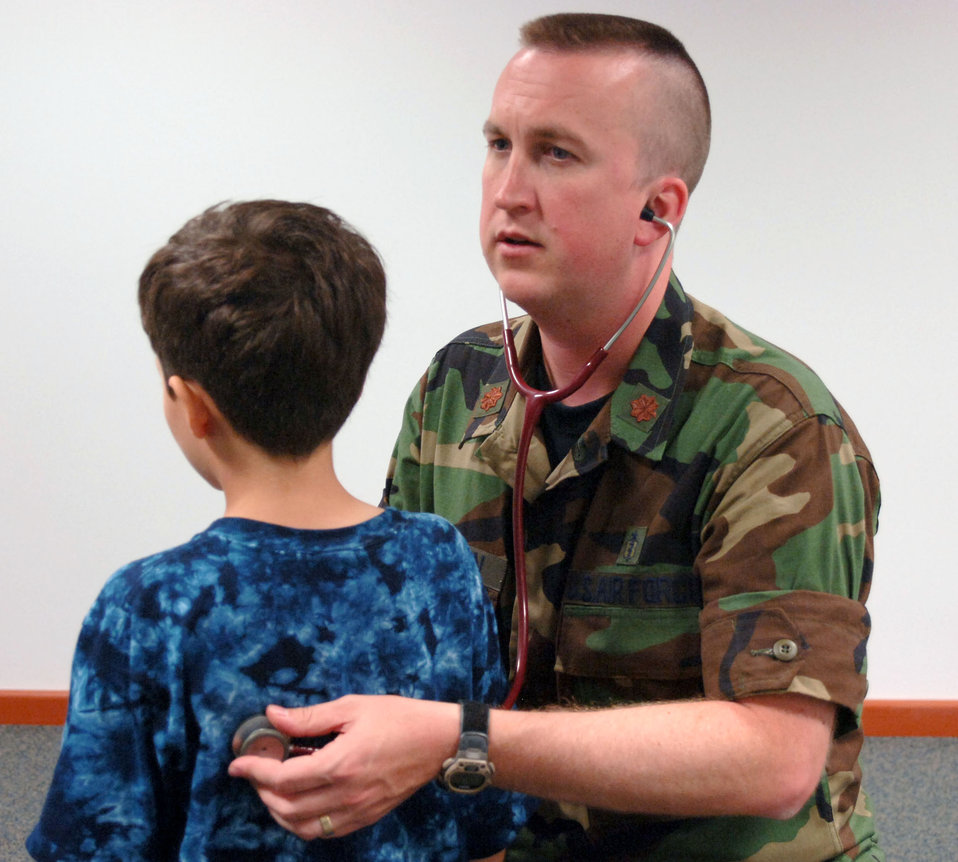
Incirlik assists Americans fleeing Lebanon

Maj. (Dr.) Matthew Hanson checks 6-year-old Nader Jaafar's breathing during processing at Incirlik Air Base, Turkey, on July 21. Nader is one of 29 American citizens who processed into the base today after departing Lebanon. Major Hanson is a pediatrician with the 39th Medical Group.